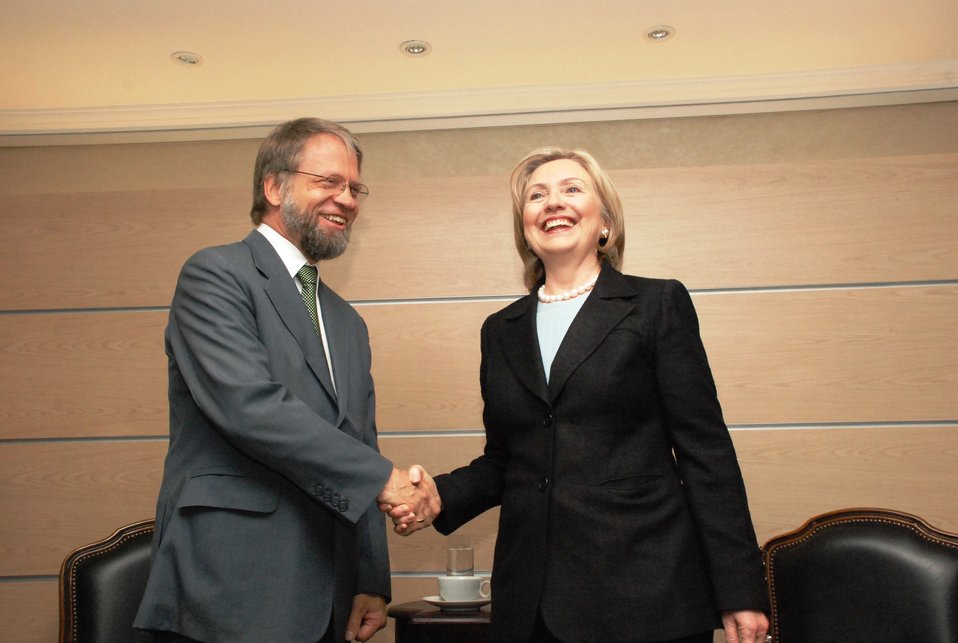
Secretary Clinton Shakes Hands With Colombian Presidential Candidate Antanas Mockus

U.S. Secretary of State Hillary Rodham Clinton meets with Colombian Presidential Candidate Antanas Mockus to discuss issues of bilateral interest at the Hotel Charleston in Bogotá, Colombia, on June 9, 2010.